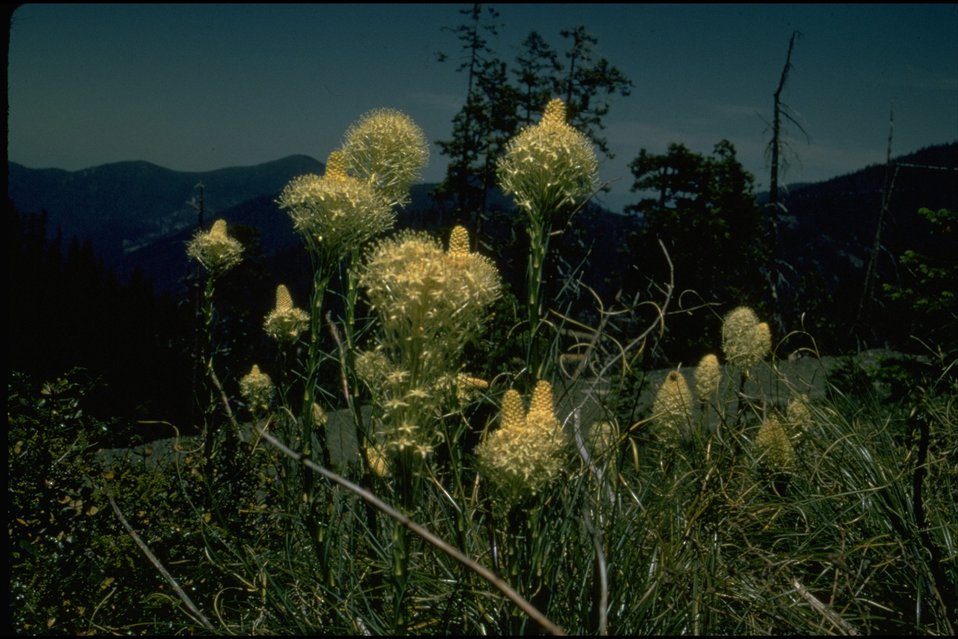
Rogue River - Bear Grass Flowers.